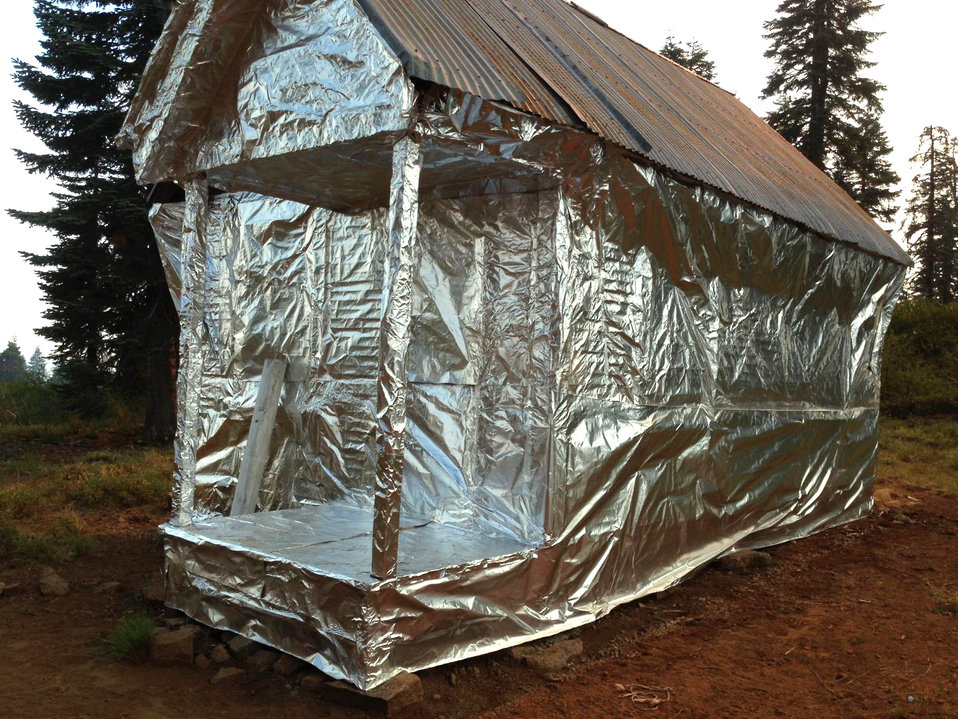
The historic Trinity Summit Guard Station at Six Rivers National Forest is wrapped in aluminized heat wrap to protect it from the Corral Complex Fire. The Corral Complex Fire in the Six Rivers National Forest near the Trinity Alps Wilderness area in California began on Aug. 10, 2013 by lightning and has consumed approximately 4, 450 acres.